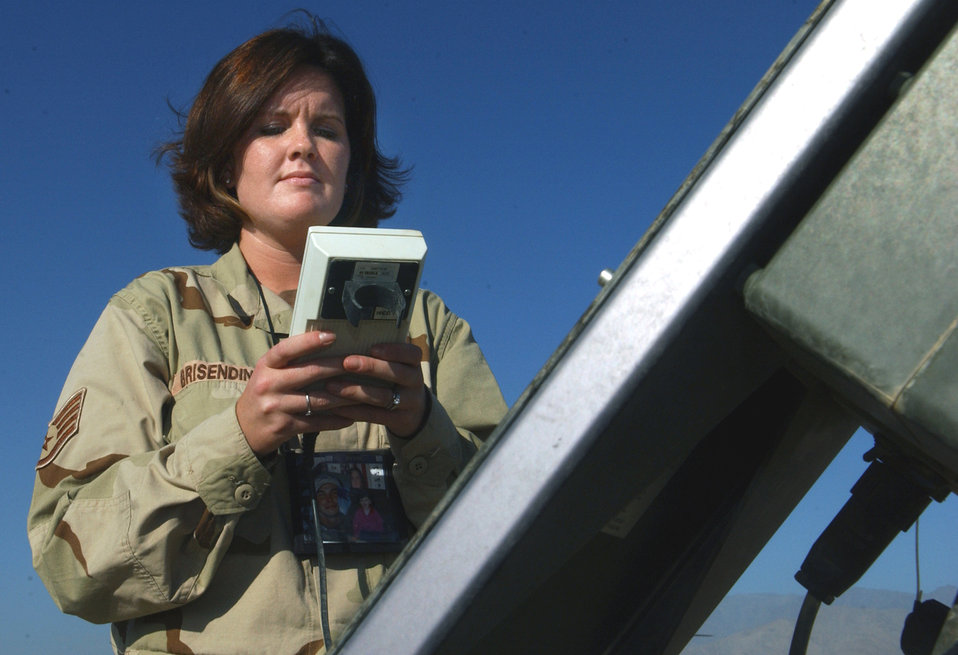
Weather check

BAGRAM AIR BASE, Afghanistan -- Staff Sgt. Sherdean Brisendine adjusts the Tactical Meteorological Observation System, a portable system to help forecasters take barometric pressure, temperature, and wind direction and speed readings. She is a 455th Expeditionary Operations Group forecaster here.